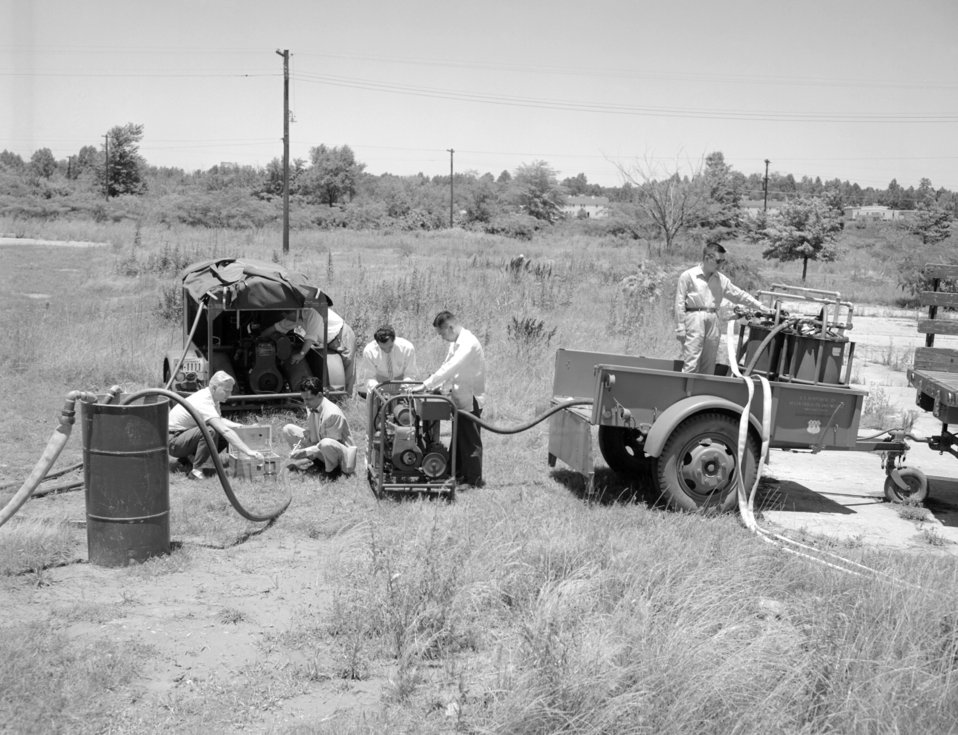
Foreign trainees in the field who are working with a hypo-chlorinator.